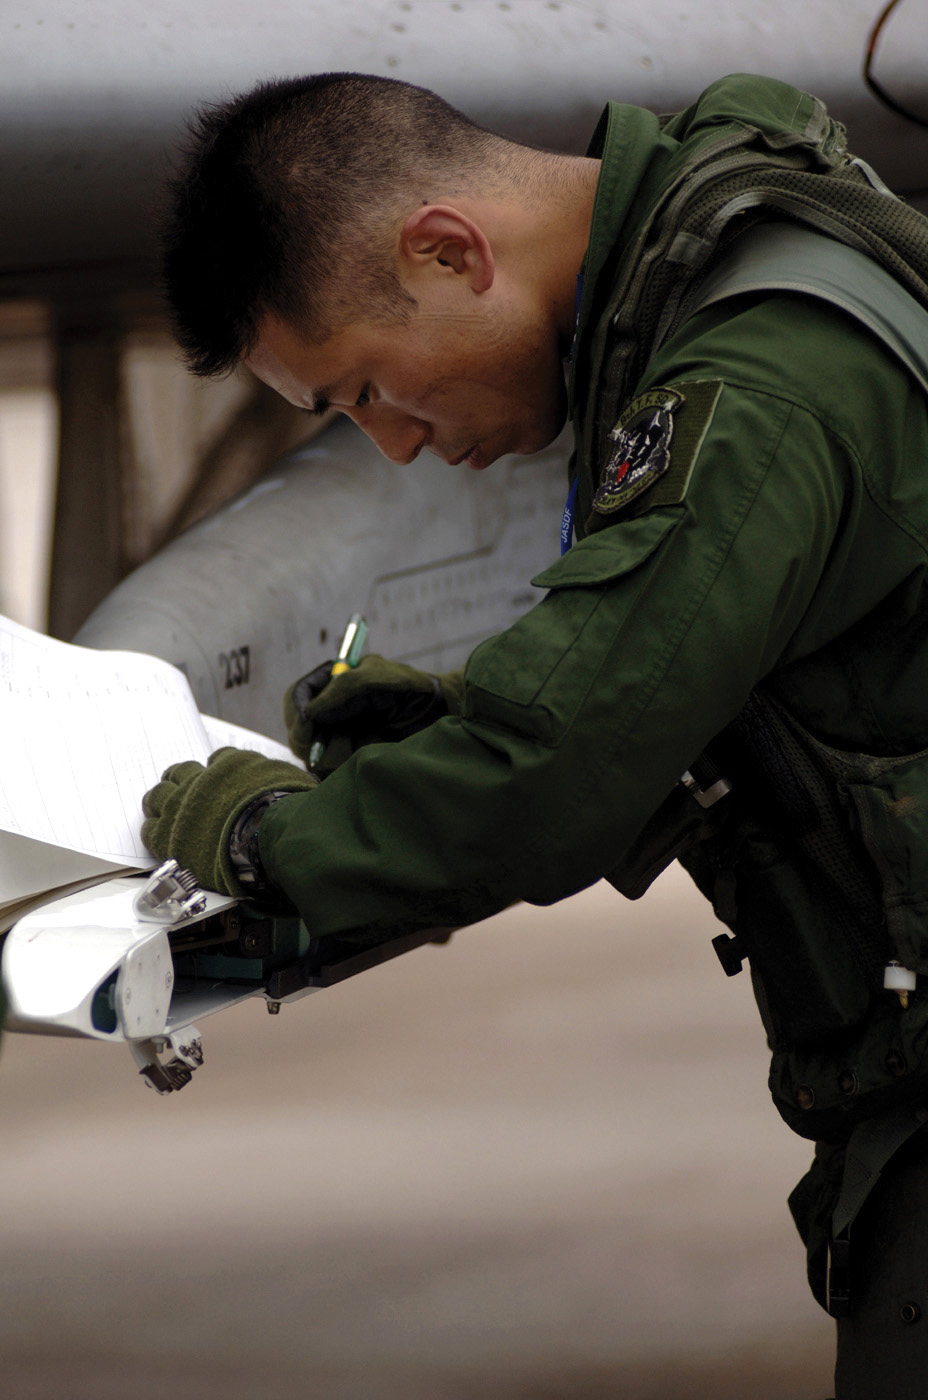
Cope North bilateral exercise wraps up in Guam

ANDERSEN AIR FORCE BASE, Guam -- Japanese 1st Lt. Nobuhiro Horii performs a preflight inspection before a Cope North mission involving live munitions. This is the first year the Japanese air self-defense force has used live munitions during training missions here.